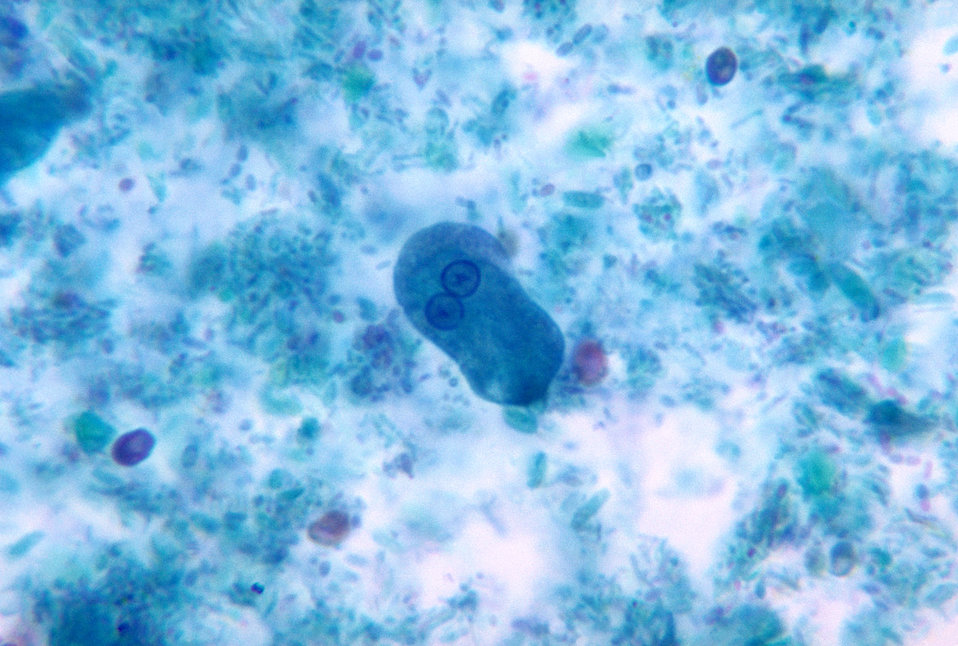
This micrograph revealed a trophozoite of an Entamoeba histolytica protozoan parasite.